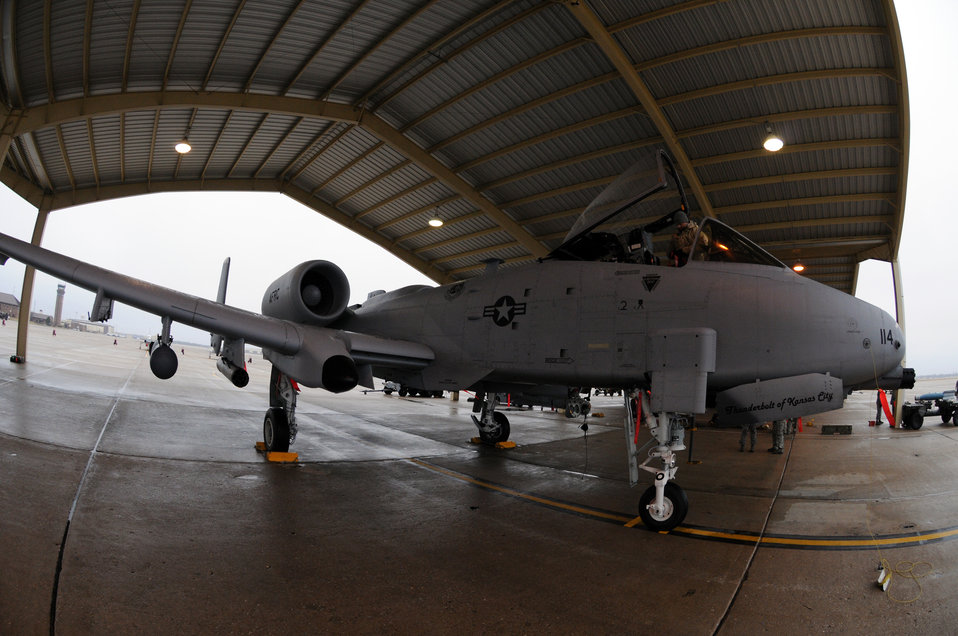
A-10 rescue

Maj. Steve Nester, an A-10 Thunderbolt II pilot with the 303rd Fighter Squadron at Whiteman Air Force Base, Mo., guided a civilian pilot to a safe landing in Springfield, Mo., March 11, 2010, after the civilian pilot radioed he was low on fuel and unable to make a landing due to bad weather. The 303rd FS is part of the 442nd Fighter Wing, an Air Force Reserve unit at Whiteman AFB.